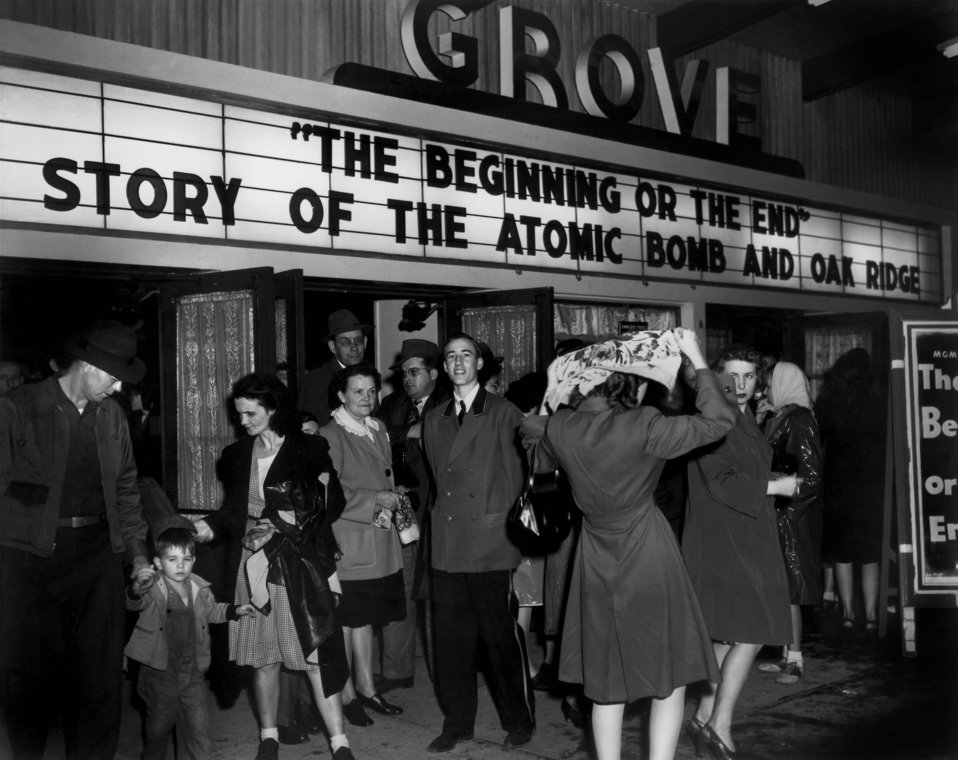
Grove Theater 'Beginning or The End' Movie Oak Ridge

3363-5 DOE photo Ed Westcott

Grove Theater 'Beginning or The End' Movie Oak Ridge Tennessee March 1947